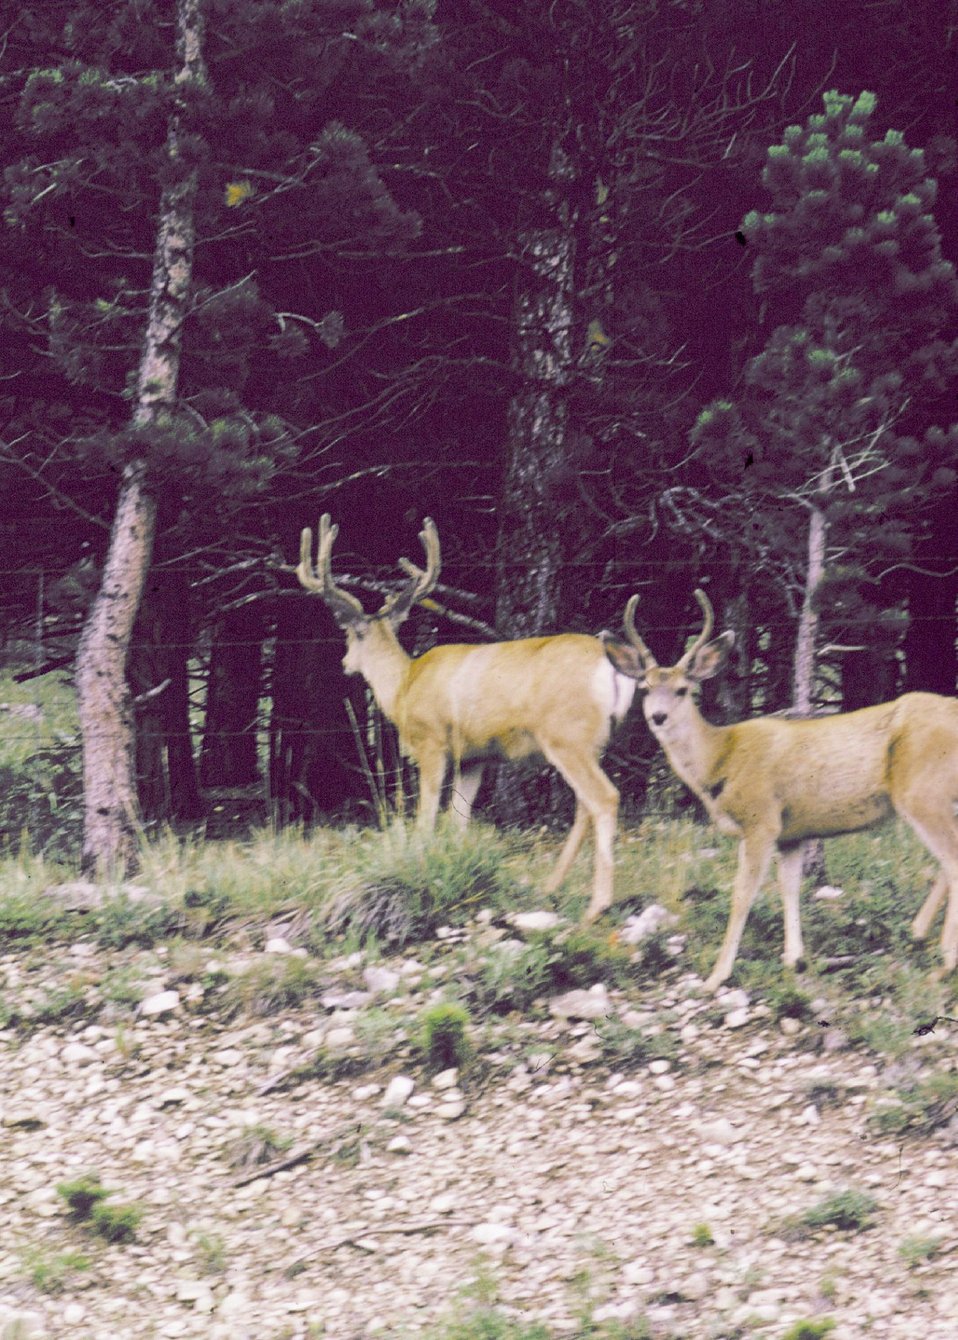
Deer on Casper Mountain.